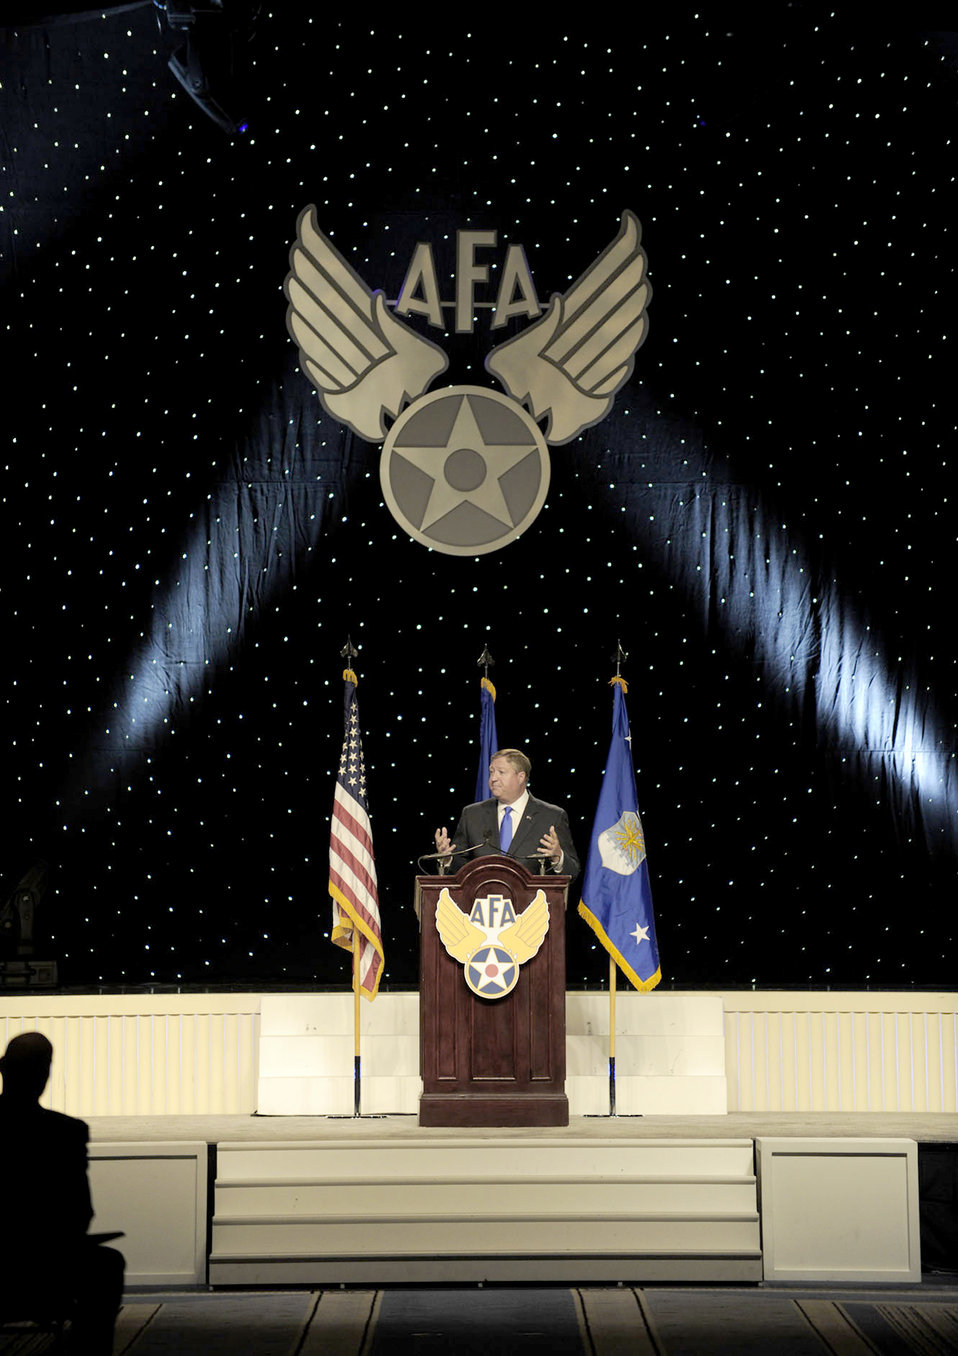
Secretary of the Air Force Michael Donley delivers his keynote speech during the opening morning of the Air Force Association's Air & Space Conference and Technology Exposition, Sept. 13, 2010, in National Harbor, Md. In concluding his speech, Secretary Donley discussed the world we live in today and how to ensure the Air Force remains well-postured for what tomorrow brings.